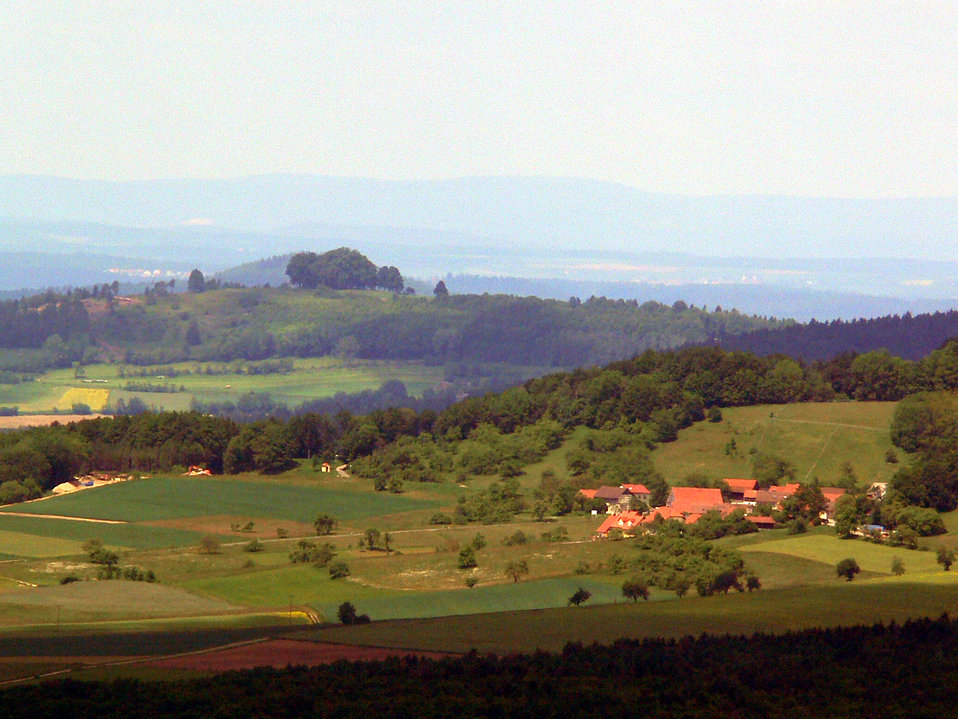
038 Veitsberg